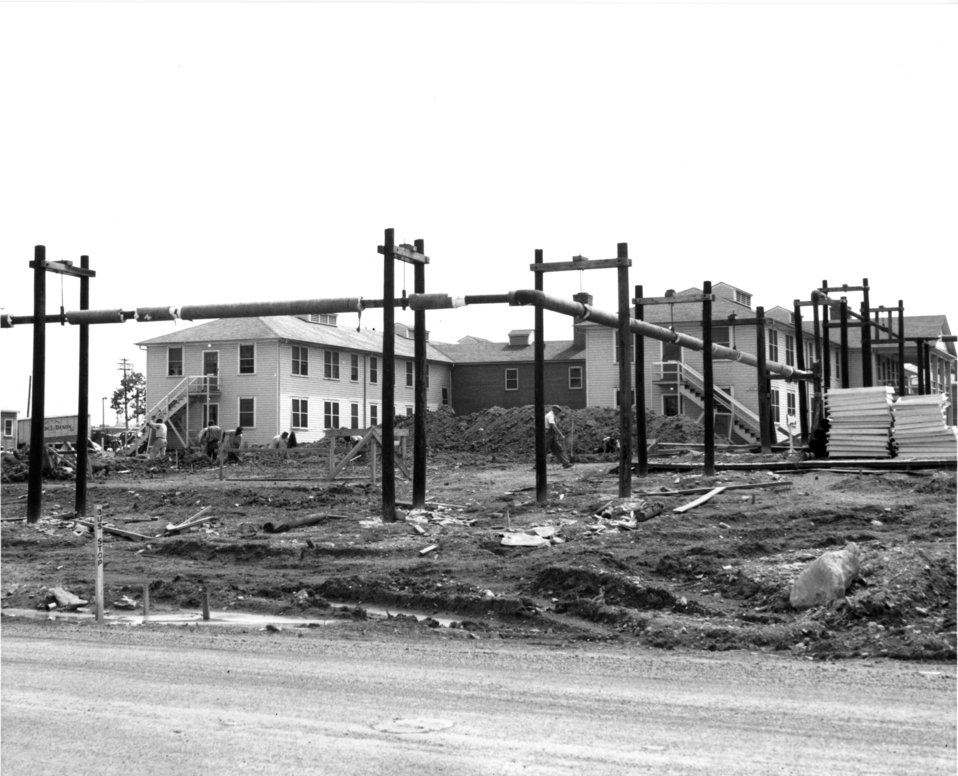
Construction activity at Oak Ridge